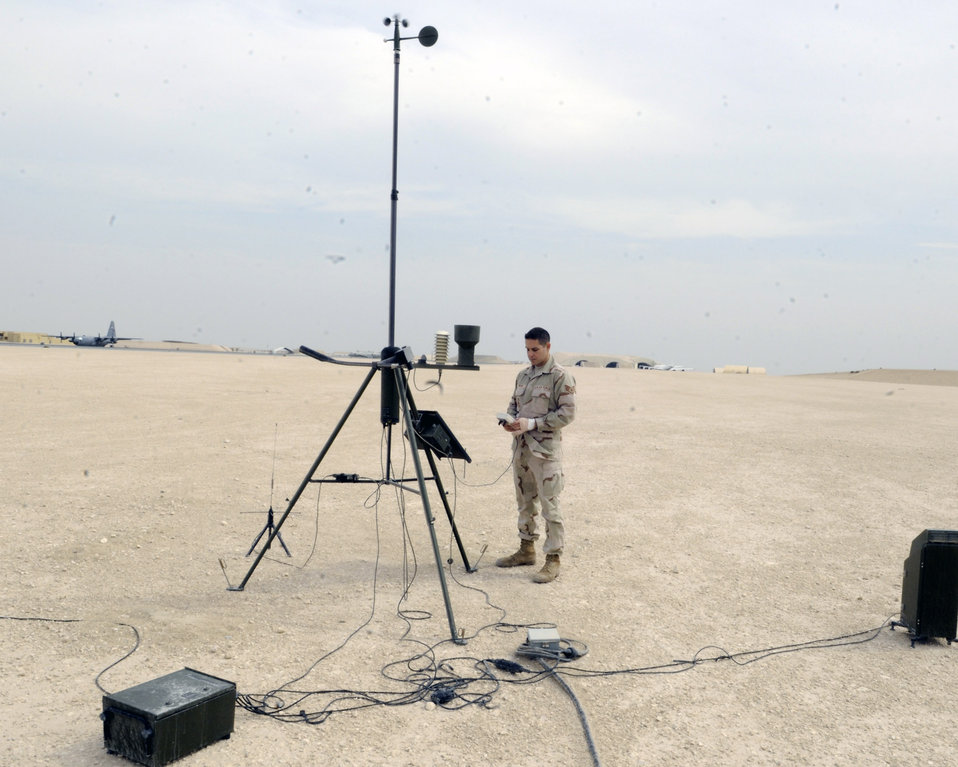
Weather flight forecasts ensure mission efficiency

Staff Sgt. Kevin Fedon, a weather forecaster assigned to the 379th Expeditionary Operations Support Squadron at an air base in Southwest Asia, checks weather readouts, including temperature, wind speed, wind direction and precipitation, at a remote weather sensor. The weather readings are put into a weather model to help predict weather patterns and are used for daily reports to aircrews preparing for missions. Sergeant Fedon is a native of Lincoln, Neb., and is an Air National Guardsman deployed from Offutt Air Force Base, Neb.